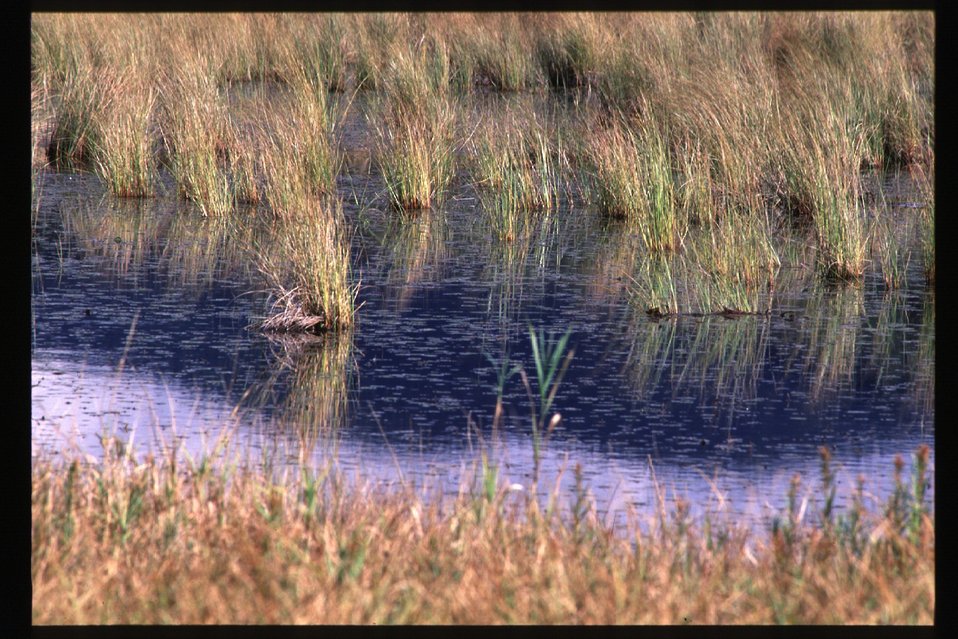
Scenic Gamlin Lake Couer d'Alene Field Office UCSC Upper Columbia Salmon Clearwater District